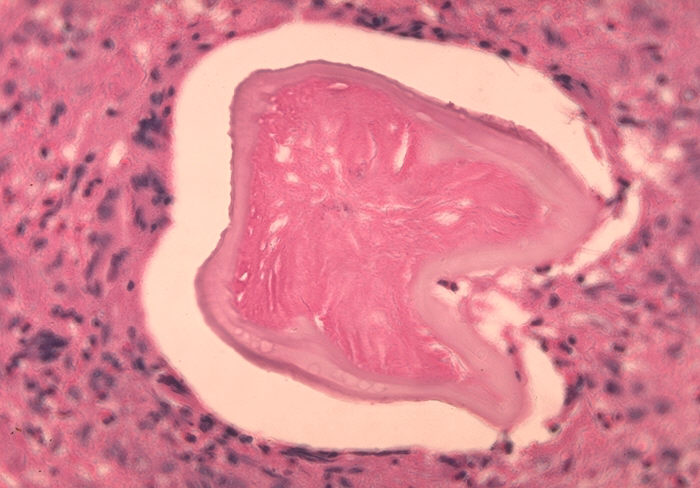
Histopathology showing cross section of Dirofilaria worm in eye.